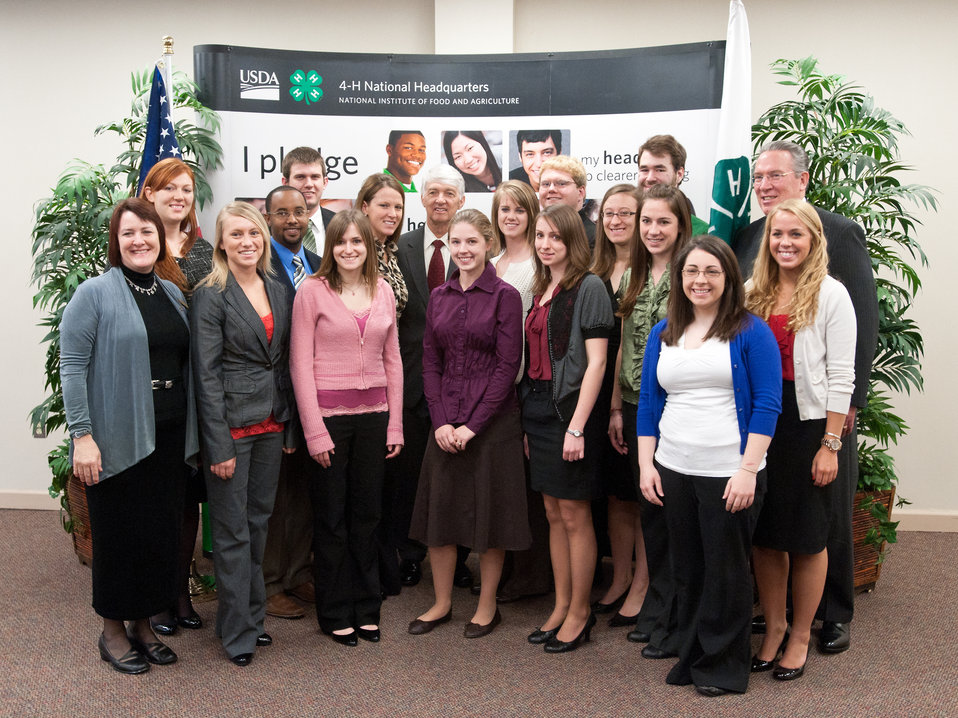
U.S. Department of Agriculture's (USDA) National Institute of Food and Agriculture Representatives with collegiate 4-H members at the National 4-H Conference on Tuesday, April 5, 2011 in Washington, DC. The conference is the premier youth development opportunity of the USDA.